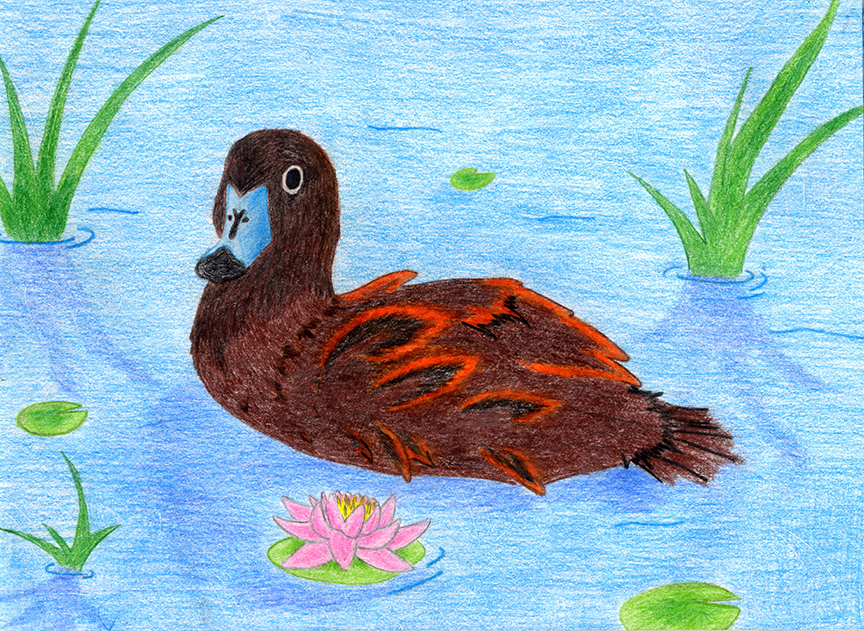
JRDuck2013PR

2013 Junior Duck Stamp Best of Show-Puerto Rico